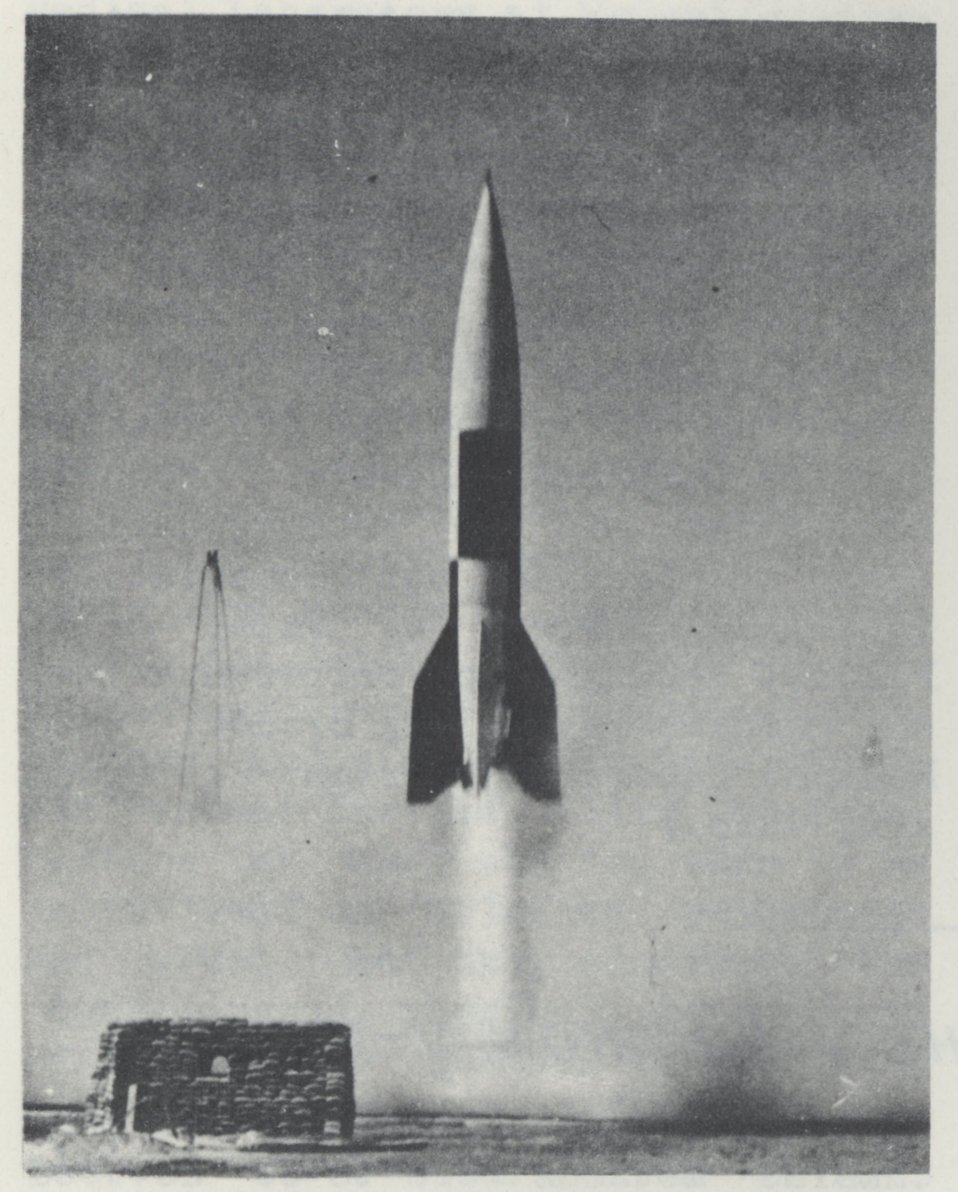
Weather Service Bulletin No. 2, 1950. P. 6. V-2 rocket being launched at White Sands Proving Ground. Besides weapons related research, a number of these rockets were used for meteorological research and early Earth photography from high altitude.